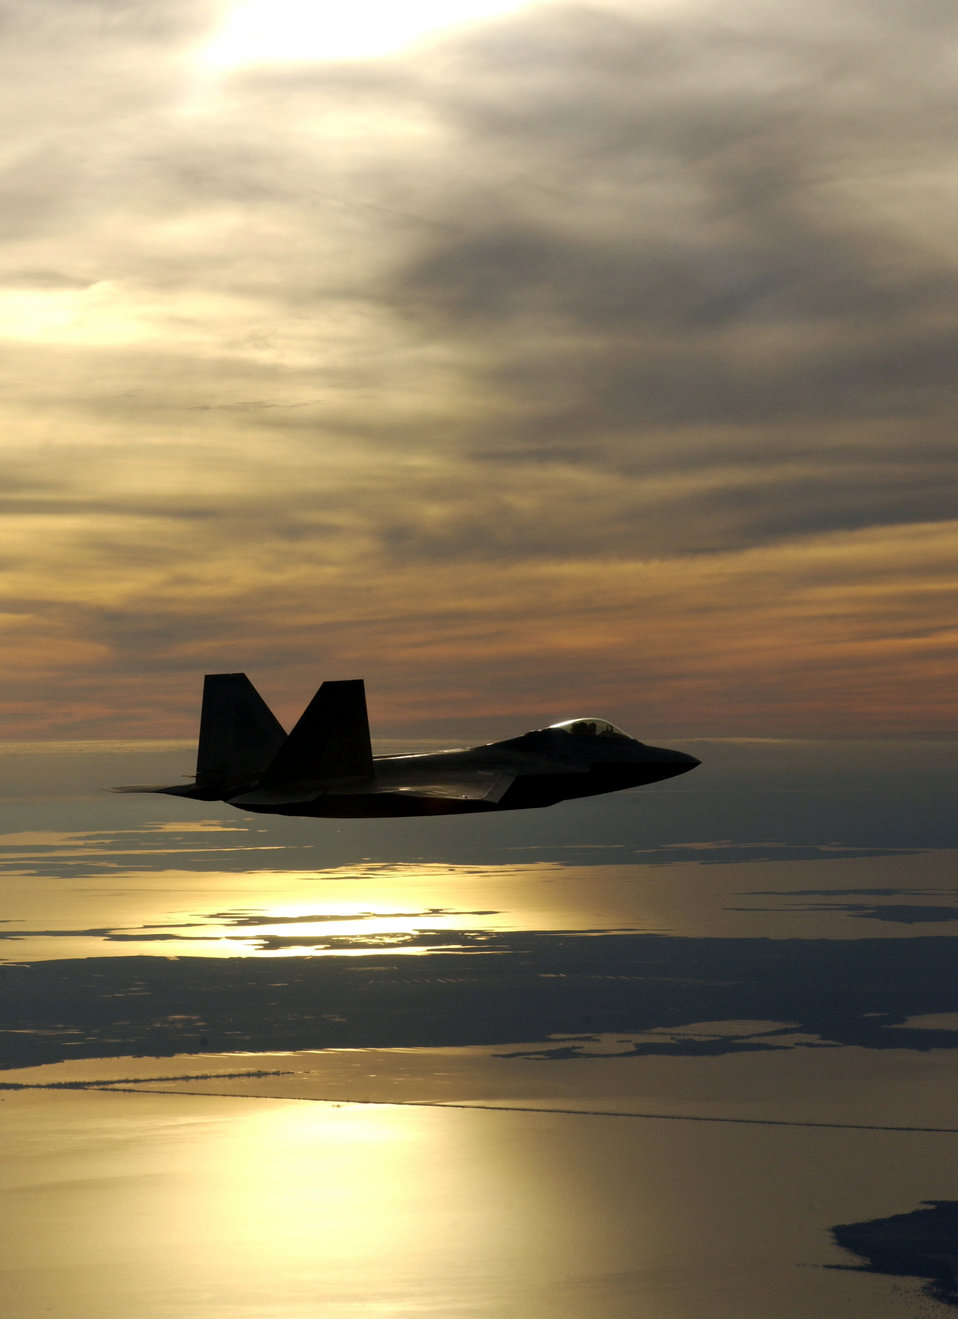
Celebrating 100 years of flight

KILL DEVIL HILLS, N.C. -- Lt. Col. Dave Rose flew the Air Force's new F/A-22 Raptor during a First Flight Centennial Celebration fly-by at the Wright Brothers National Memorial here Dec. 16. Langley Air Force Base, Va., is slotted to be the home of the first operational squadron of F/A-22s by the end of 2004. Rose is from the 422nd Test and Evaluation Squadron at Nellis AFB, Nev.